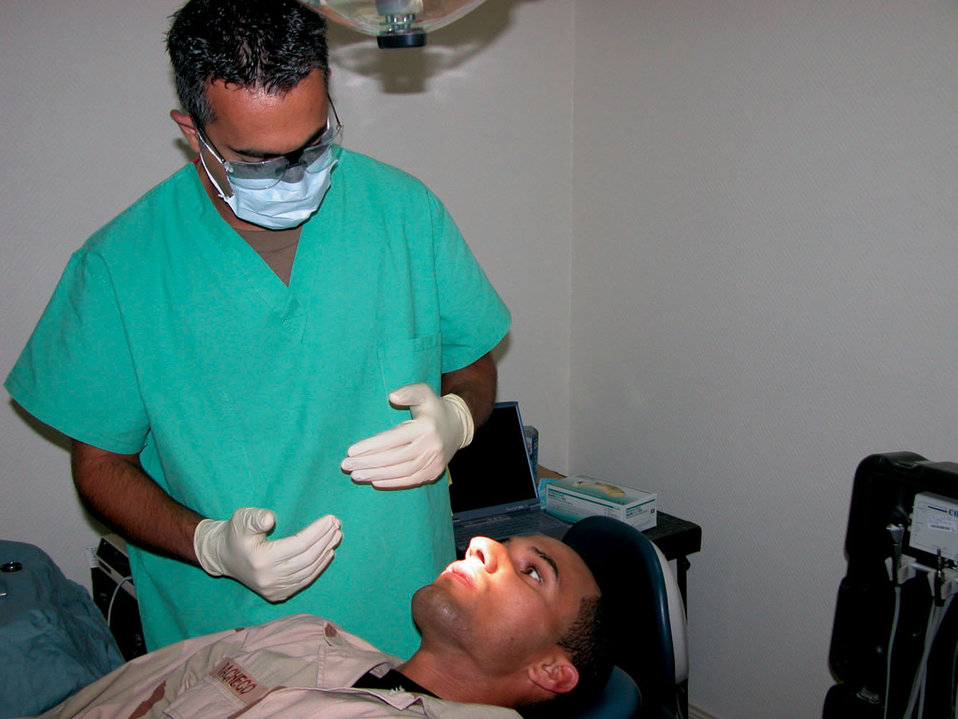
Dentist, technician battle workload to get the job done

SOUTHWEST ASIA -- Capt. (Dr.) Ali Miremami meets with a patient to discuss a dental procedure. Dr. Miremami is the only dentist assigned to the 379th Expeditionary Medical Group at a forward-deployed location. He is responsible for the care of more than 10,000 people in the region.